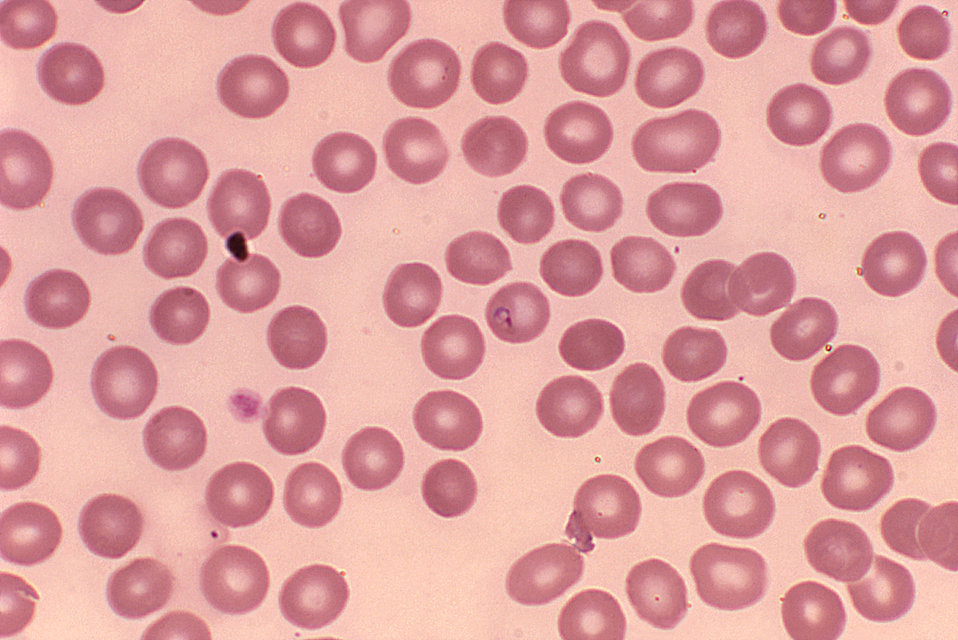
Babesia microti in blood smear. Giemsa stain. Parasite.